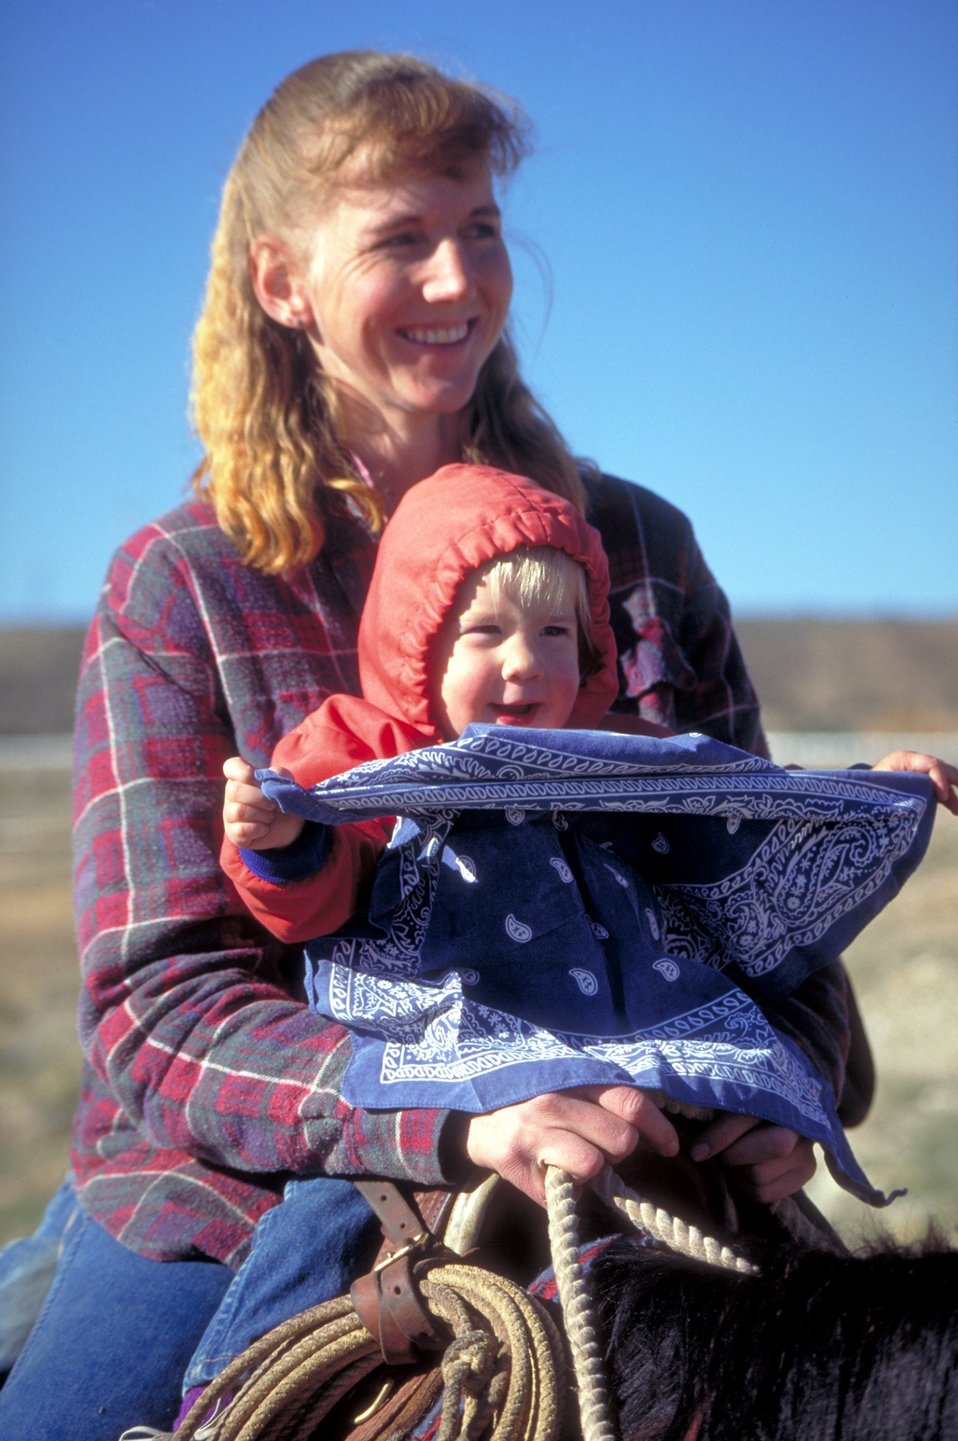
Working cowboys living near Vernal, Utah.